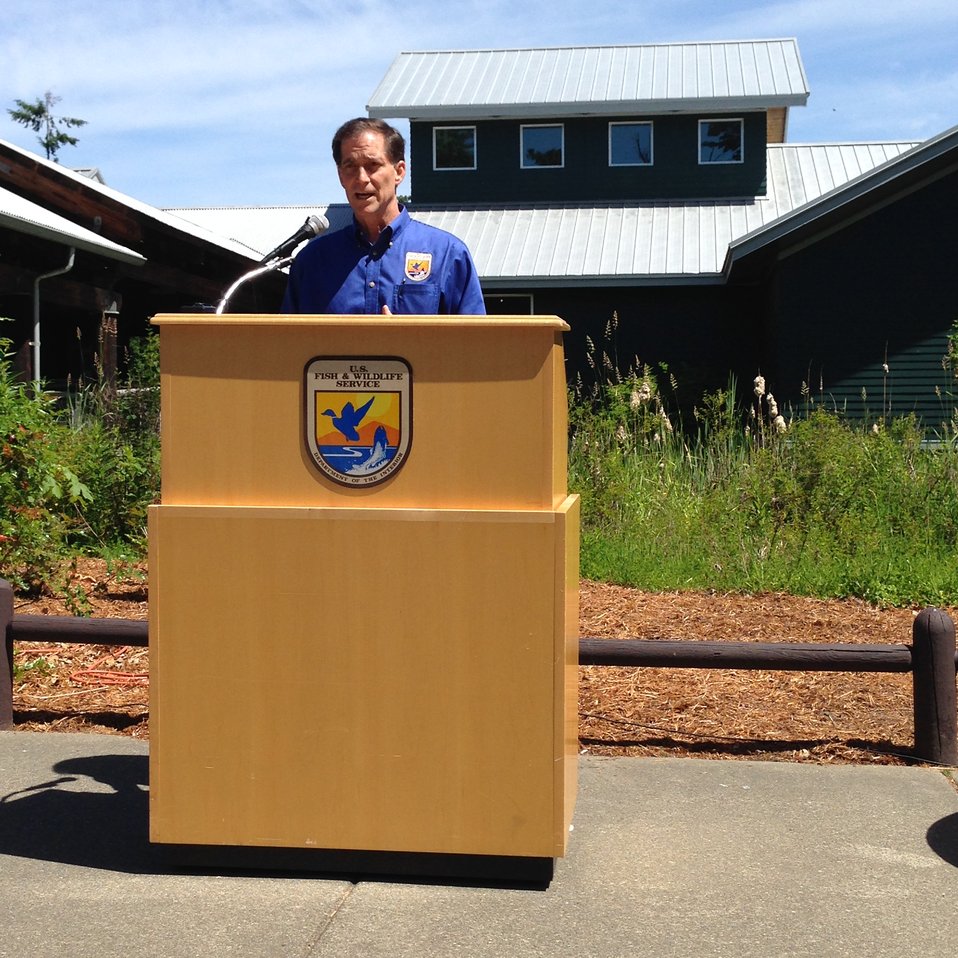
Norm Dicks Visitor Center Ceremony

Secretary of the Interior Sally Jewell joined U.S. Fish and Wildlife Service Director Dan Ashe (pictured) and tribal and community partners on June 6, 2014, to celebrate the renaming of the visitor center at Nisqually National Wildlife Refuge in honor of former U.S. Congressman Norm Dicks.